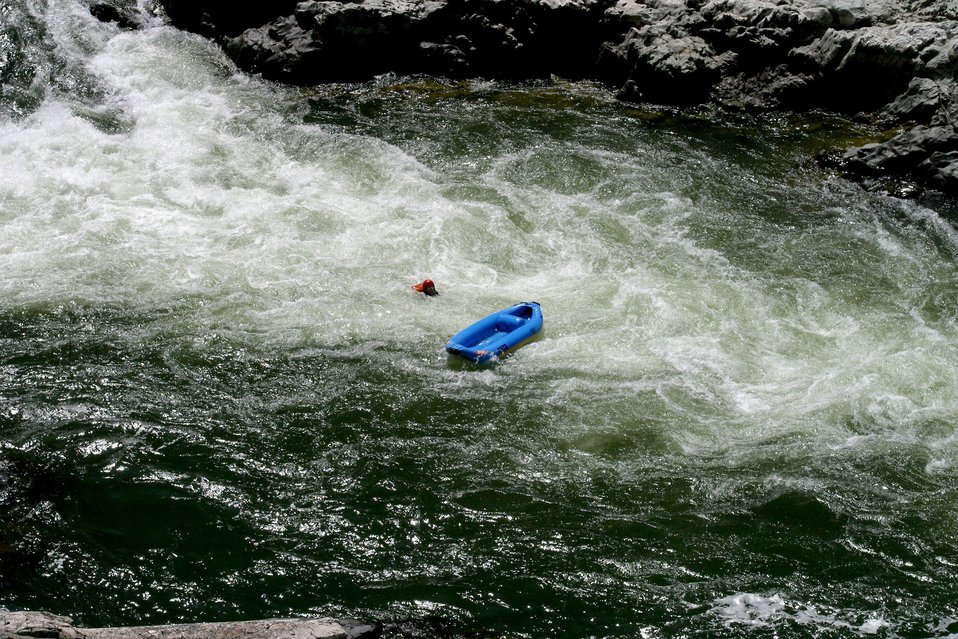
Boater at Grave Creek Falls